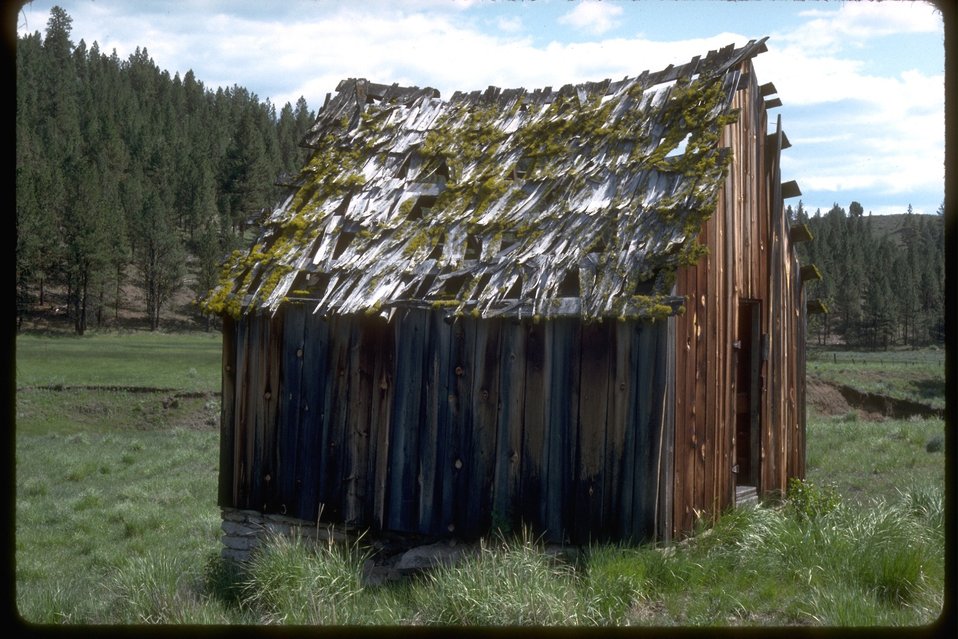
Historic building on a ranch in Izzee, Oregon.